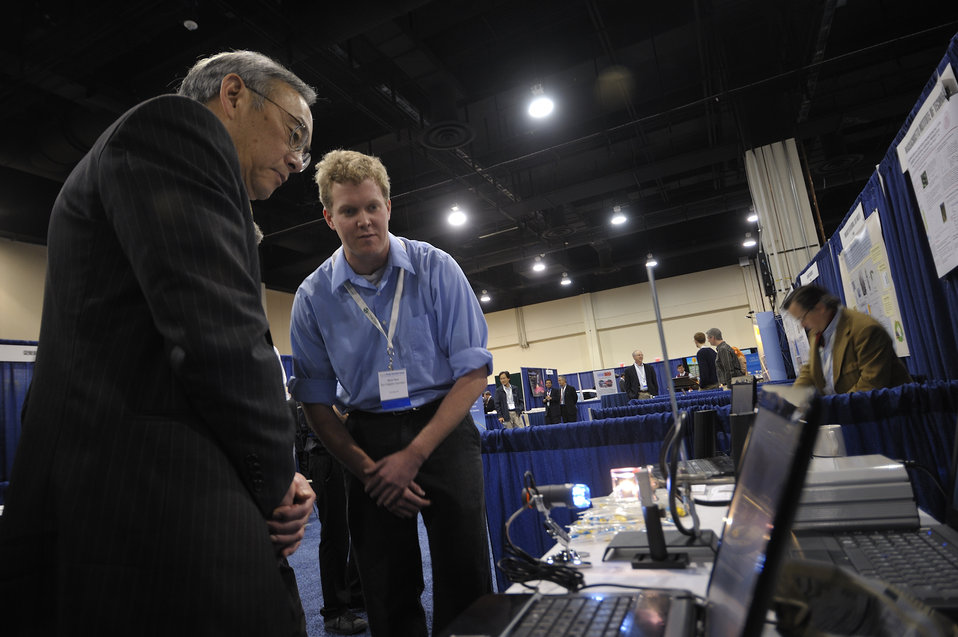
ARPA-E Energy Innovation Summit 2011, 56 of 83

Steven Chu, Secretary, United States Department of Energy speaks with Sun Catalytix at the summit's Technology Showcase.